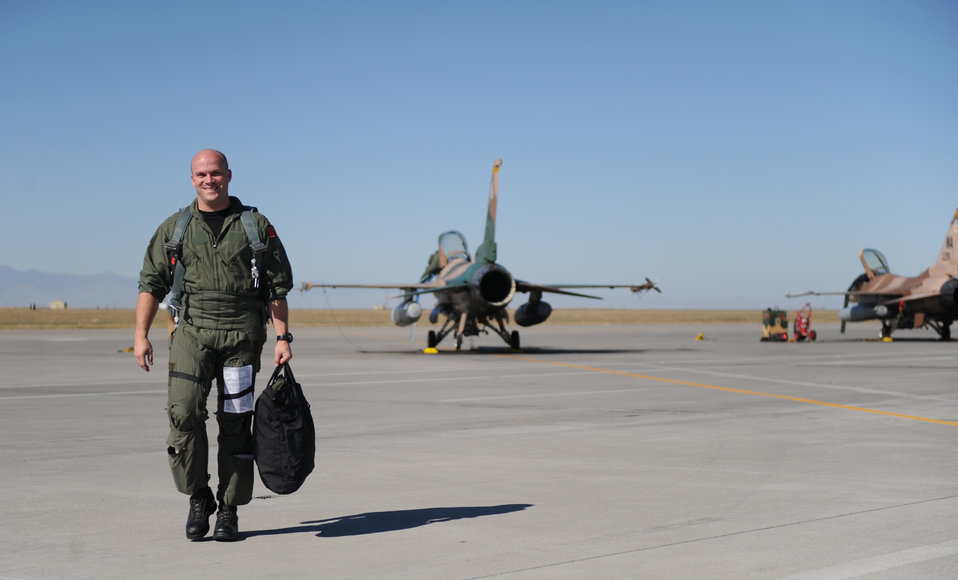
Gunfighter Flag wraps up

Capt. Robert Stimpson, a 64th Aggressor Squadron pilot from Nellis Air Force Base, Nev., heads for base operations at Mountain Home AFB, Idaho, after flying a training mission Sept. 23 during Gunfighter Flag. With a mission to know, teach and replicate any threat friendly forces may face, pilots from the 64th AGS flying F-16 Fighting Falcons represented enemy aircrews as ?red air force? participants during the exercise. Gunfighter Flag, which ran from Sept. 14 through 24, was Mountain Home?s first large-scale, multi-national exercise which brought more than 450 personnel from the U.S. Air Force, U.S. Navy and Canadian air force to the base.